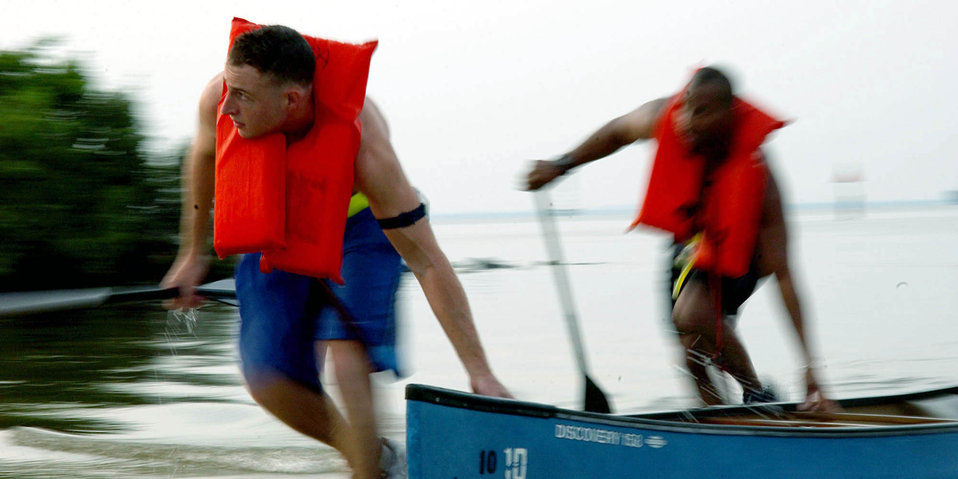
Race to the finish

MACDILL AIR FORCE BASE, Fla. -- Senior Airman Thomas Keefe and 1st Lt. Dave Gray beach their canoe during the Aug. 21 Enduro Challenge here. Next, the team had to carry their canoe roughly a quarter mile down a sandy beach before starting the next portion of the race.